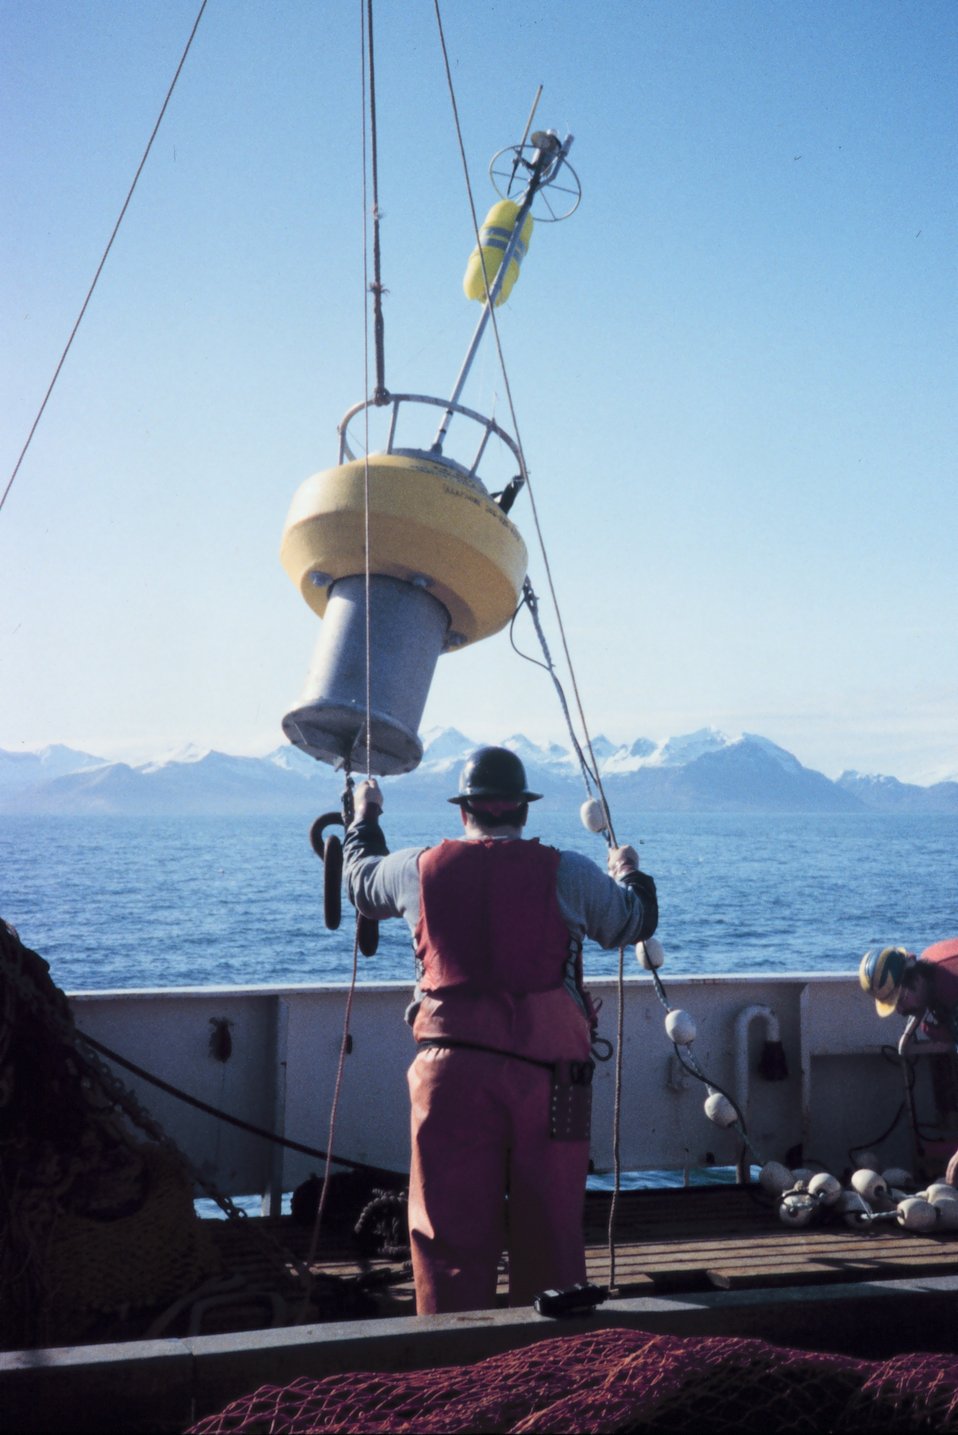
Deploying a small oceanographic buoy off the MILLER FREEMAN